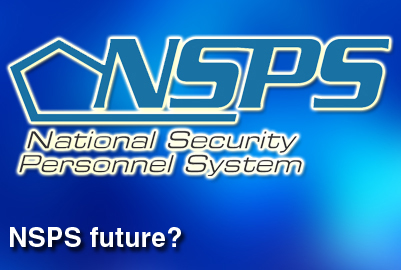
Business board calls for changes to personnel system

A board has recommended changes to the National Security Personnel System. Defense Department officials will use the board's recommendations until the future of NSPS is determined.